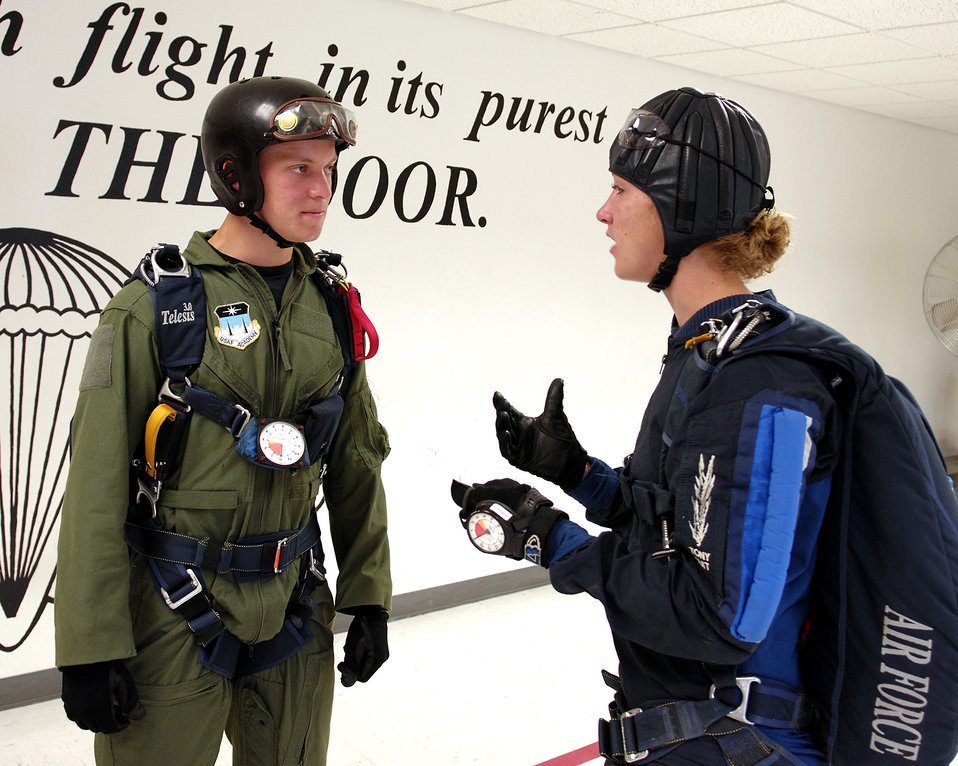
Earning those jump wings

U.S. Air Force Academy Cadet 3rd Class David Barron is briefed by jumpmaster Cadet 1st Class Lindsey Robinson July 7 during Airmanship 490, Basic Parachuting, an airmanship program where cadets earn their basic jump wings after successfully completing five free-fall jumps.